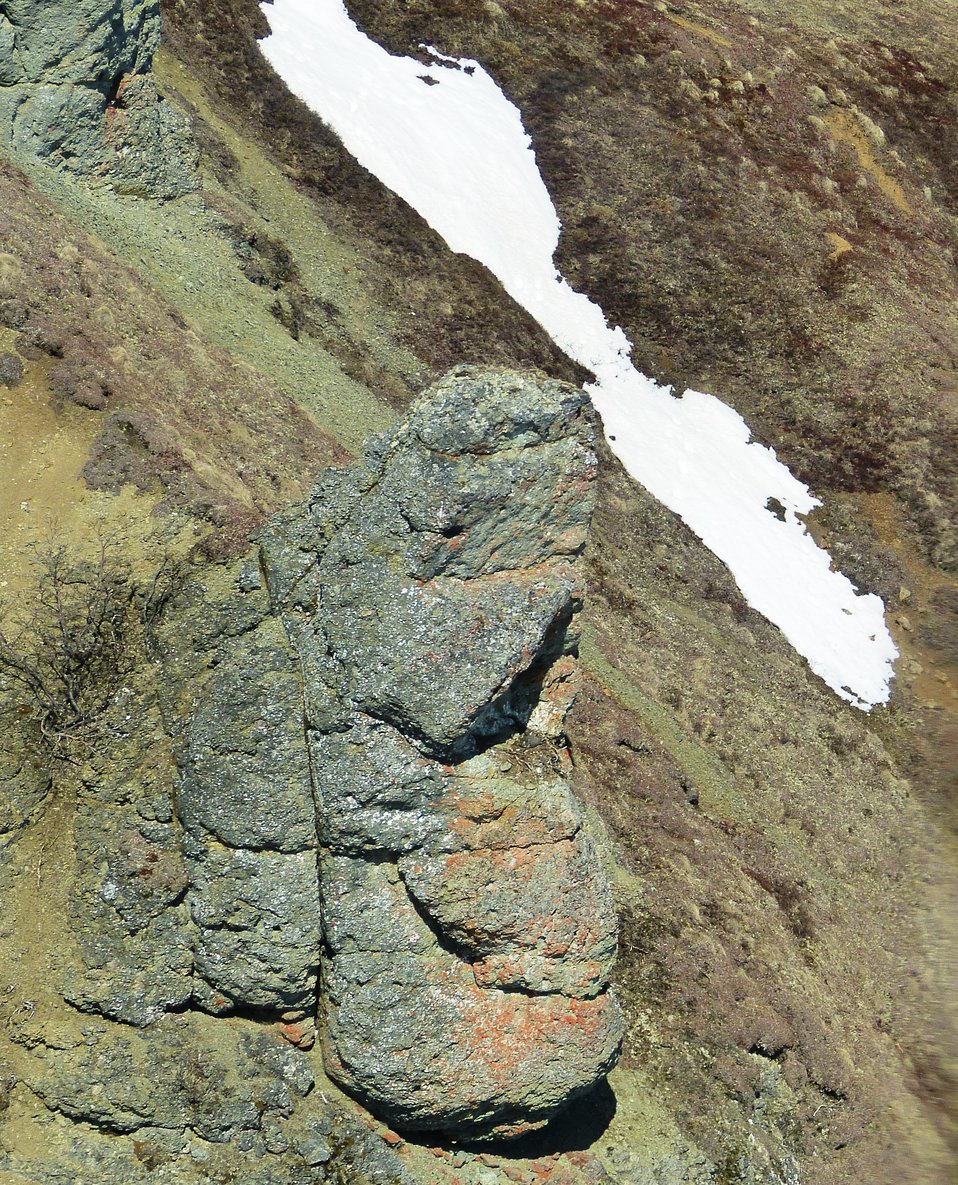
Gyrfalcon nest KSowl

Gyrfalcon nest, Kilbuck Mountains on Yukon Delta National Wildlife Refuge

Photo credit: Kristine Sowl,
USFWS, YDNWR